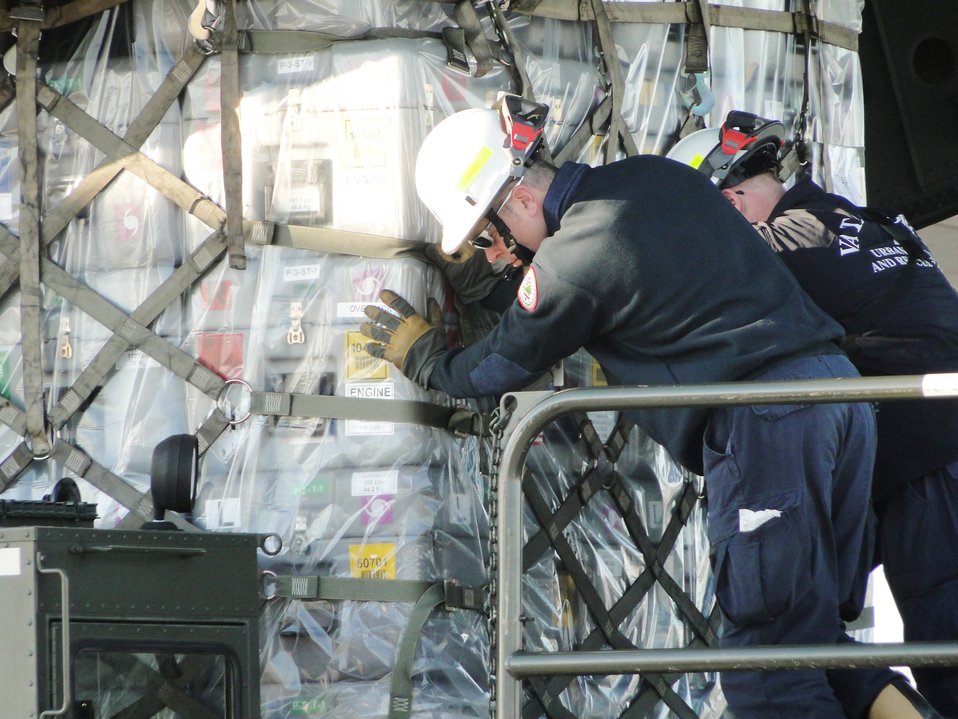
Local FEMA heads to Haiti to aid humanitarian misson

Members of Virginia Task Force 2, Federal Emergency Management Agency, load relief supplies onto a C-17 Globemaster III Jan. 15, 2010, at Chambers Field, Naval Station Norfolk, Va. The Virginia Beach-based FEMA urban search and rescue team departed for earthquake-stricken Haiti. The C17 is assigned to the 437th Airlift Wing.